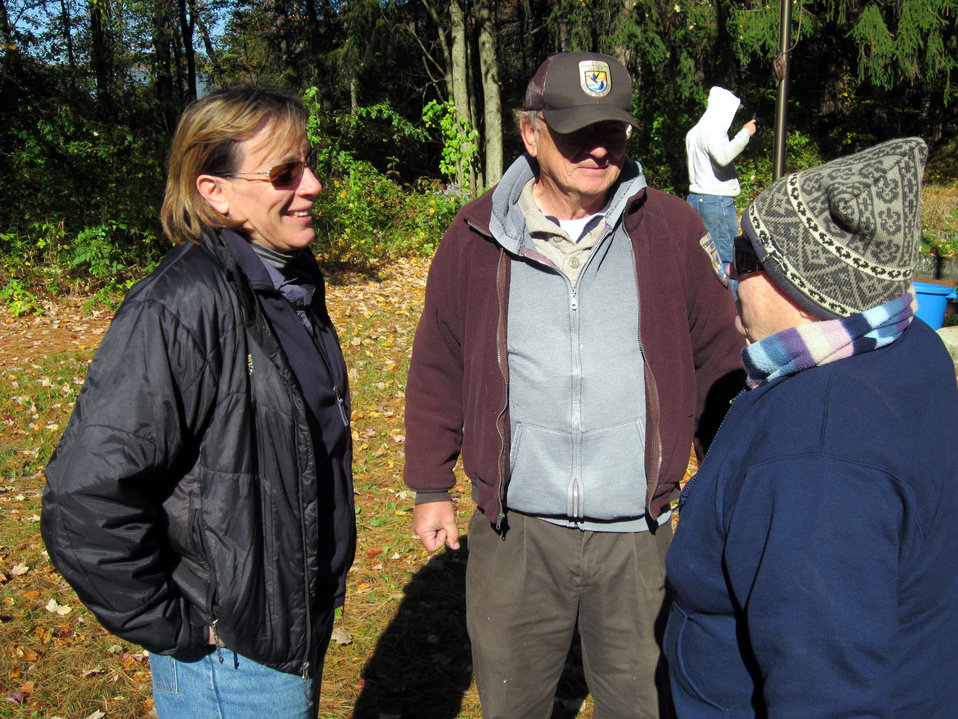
Fish tales

October 13, 2012, Sunderland, MA: Hatchery manager Mickey Novak (center) chats with Northeast Region of the U.S. Fish and Wildife Service Deputy Director Deb Rocque (left) and Lauren Corbett of the Department of Veterans Affairs at a fishing event at the Richard Cronin National Salmon Station. Novak, a veteran of the Vietnam War, has been hosting fishing events for veterans since 1992.